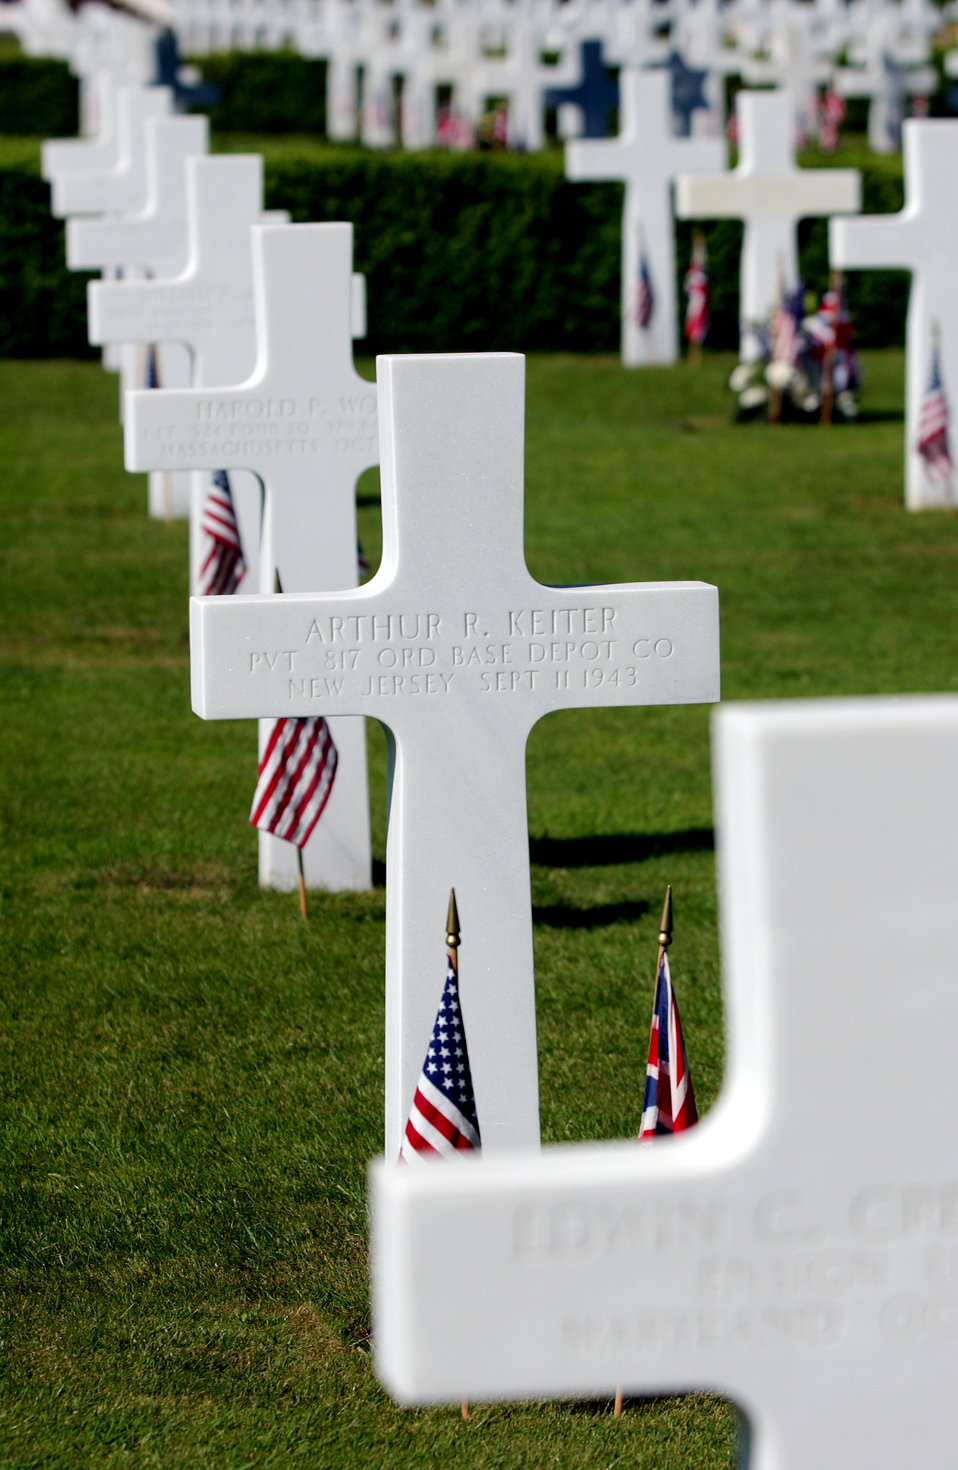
Remembering Americans

CAMBRIDGE, England -- More than 3,800 American World War II veterans were remembered during Memorial Day here at the Madingley American Cemetery on May 31. The cemetery was first established on Dec. 7, 1943, and construction was completed in 1956. This area, known as East Anglia, was used extensively during World War II, and many airfields were built over its flat landscape. The area is also where many American casualties occurred during the war.